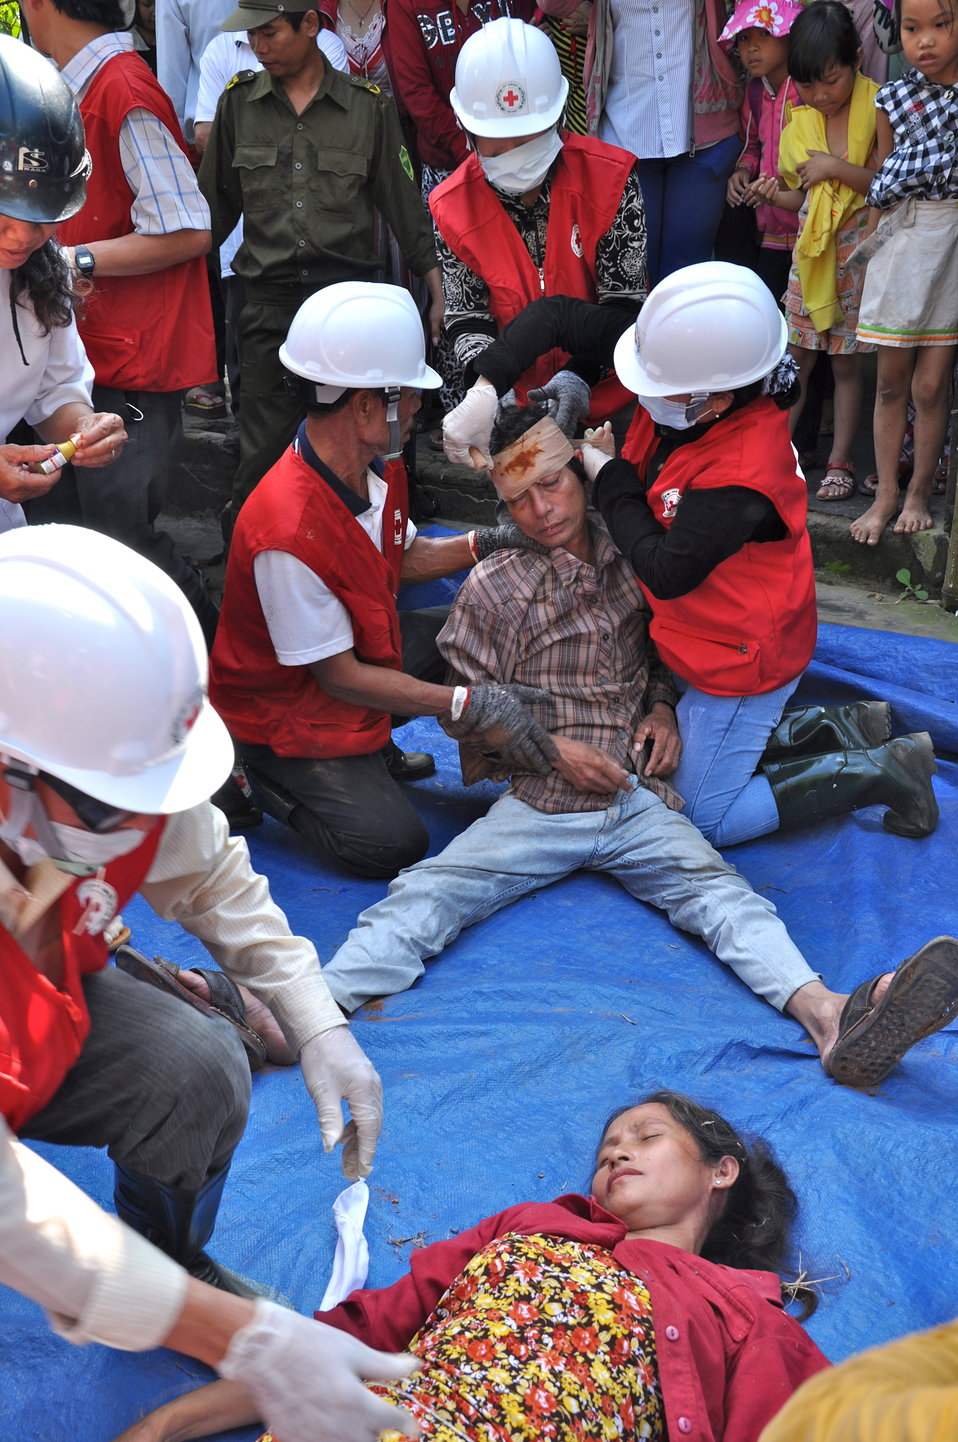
USAID, Red Cross Support Disaster Response Drill in Duy Hoa Commune, Quang Nam Province

Duy Hoa Commune, Quang Nam Province
December 5, 2012